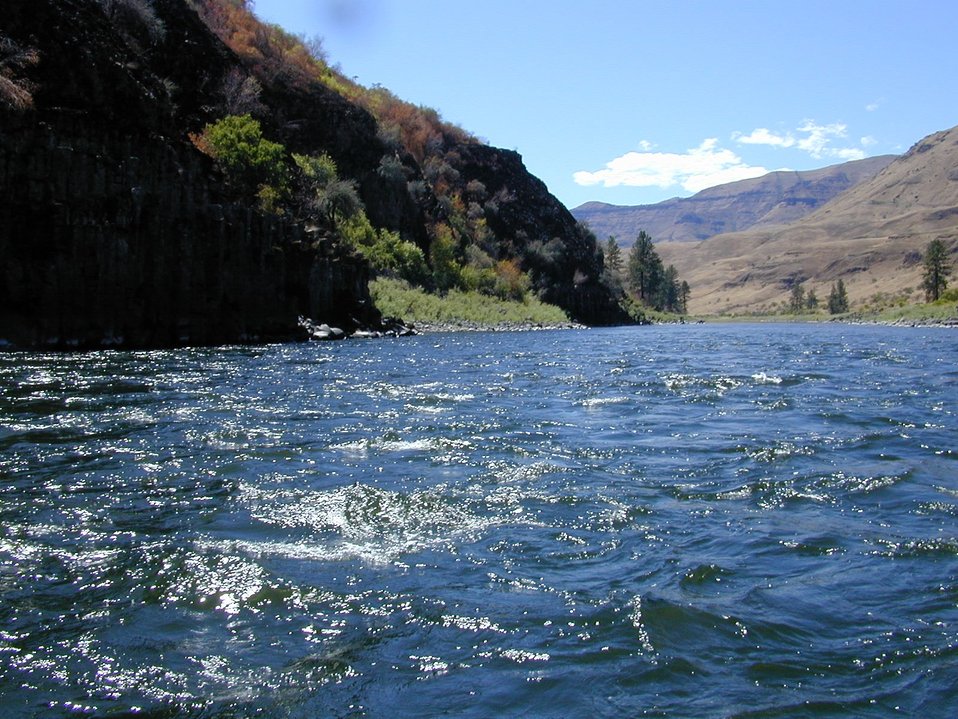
Scenic shot of Lower Salmon River Cottonwood Field Office UCSC Upper Columbia Salmon Clearwater District